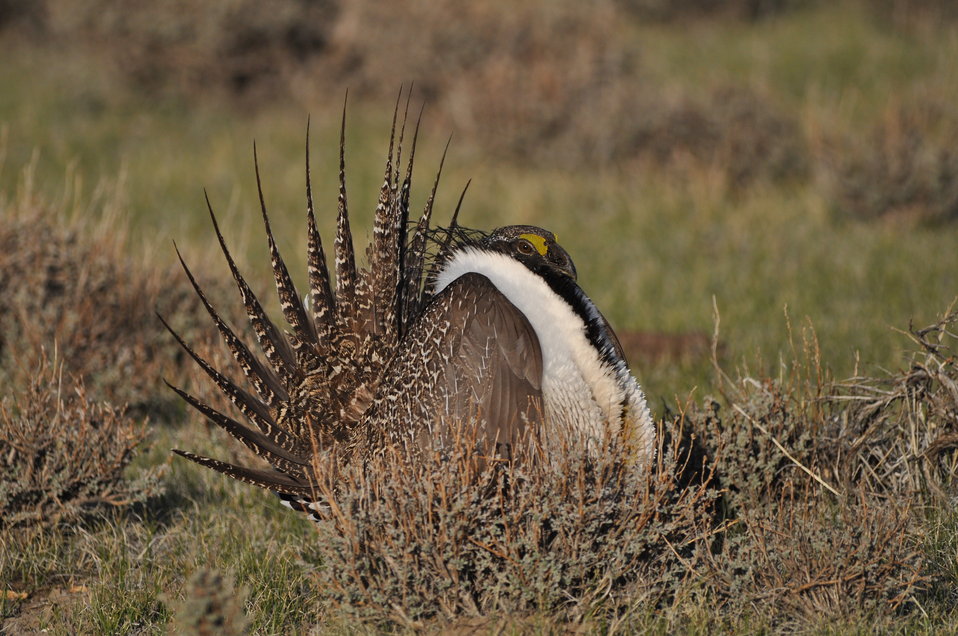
Greater Sage-Grouse

Photo Credit: Jeannie Stafford/USFWS
A greater sage-grouse male struts at a lek (dancing or mating ground) near Bridgeport, CA to attract a mate.